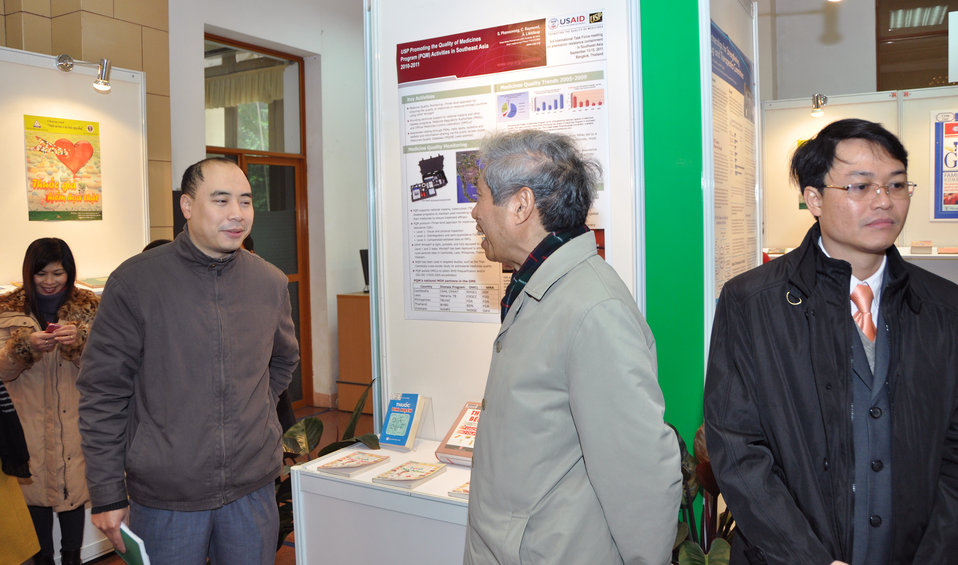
USAID Provides support and exhibition materials for safe medicine exhibition in Hanoi

Safe Medicine Exhibition